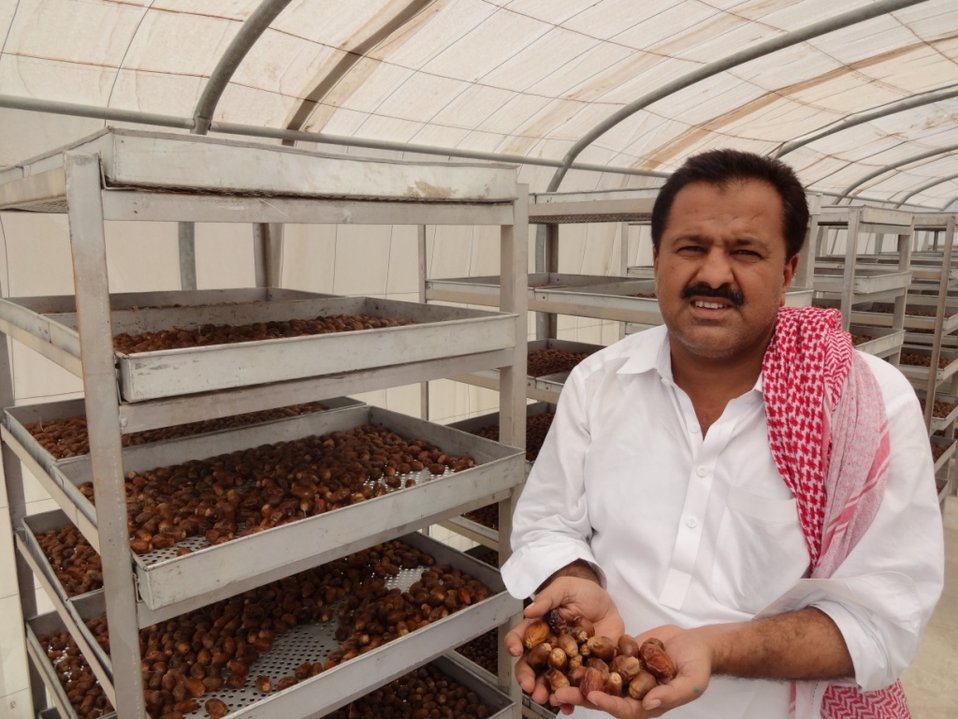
Dates Dost Program: USAID's partner farm SME, (small and medium enterprise), Kaleemullah Dates Farm, Khairpur, is all set on the road to prosperity with the introduction of modern post harvest techniques and equipment such as solar tunnel dryers. The far